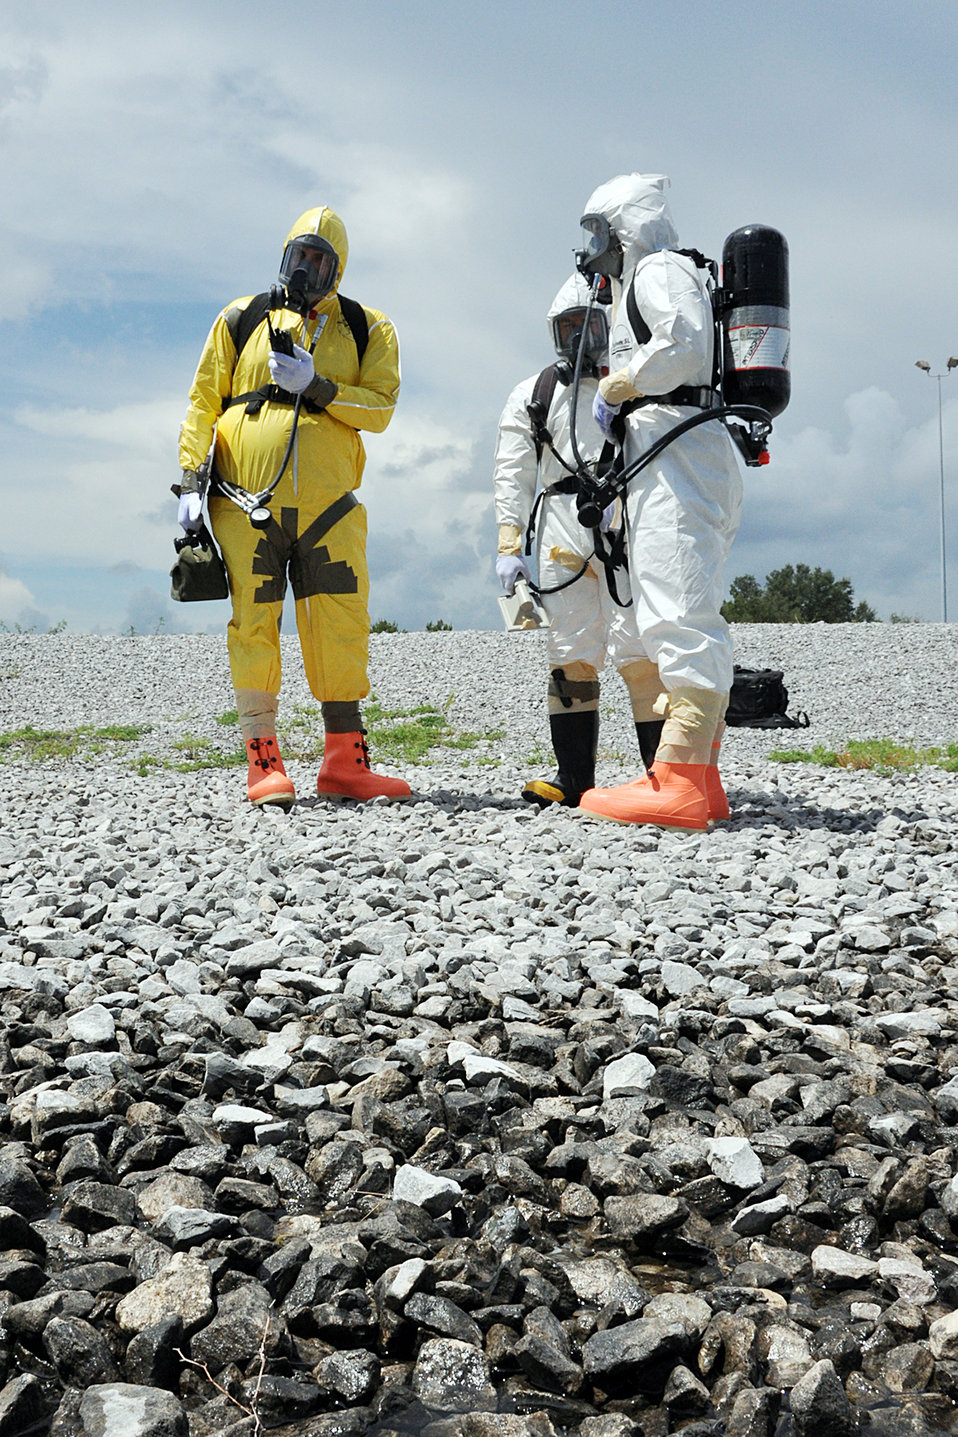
We're not on the moon

Staff Sgt Garrett Sheppard, (left to right) Airmen 1st Class Nick Graham and James Allen check readings at a simulated crash site during a nuclear accident response exercise, or NARE, Aug. 18 at Eglin Air Force Base, Fla. The NARE put Eglin's readiness to the test and allows the base's emergency responders to maintain qualifications. All Airmen are with the 96th Civil Engineer Group Explosive Ordnance Disposal team.